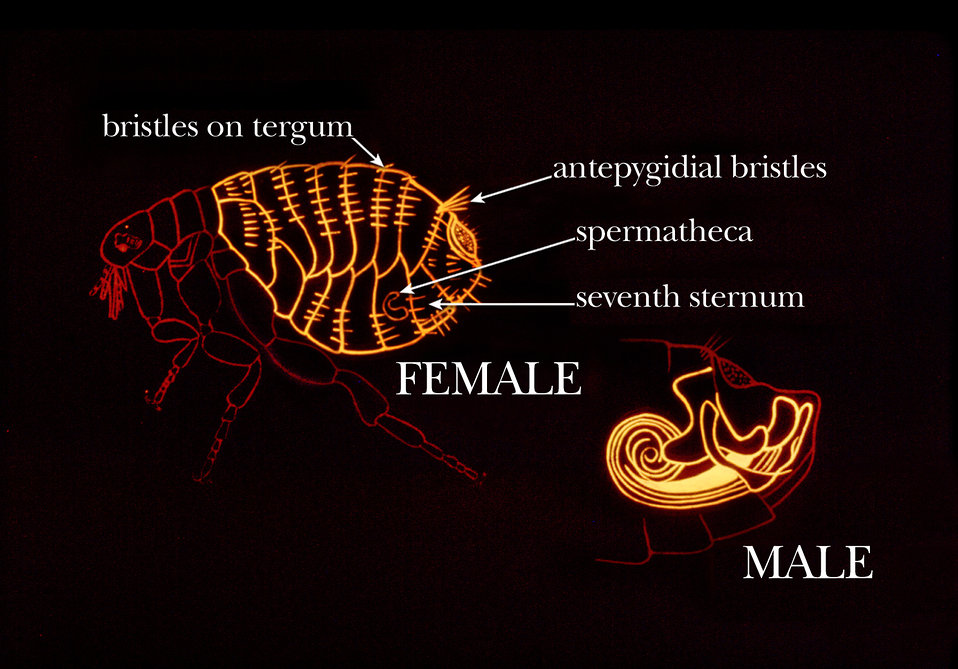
This illustration shows some common identifying characteristics found on the abdomen of the flea.